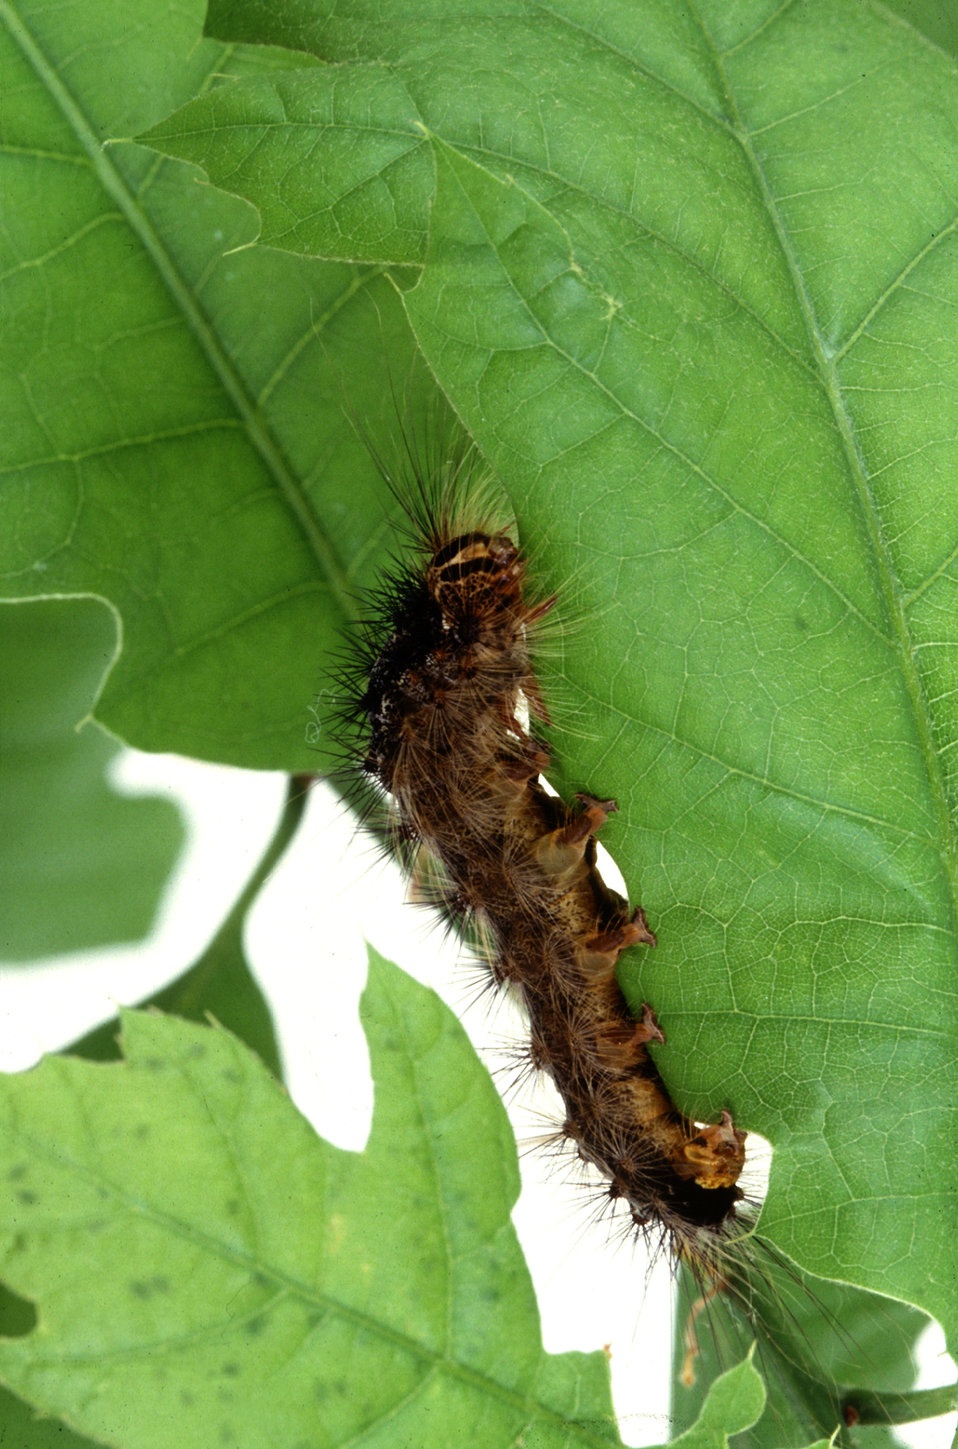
Gypsy moth caterpillars are the number one forest and shade tree pest in the Northeast.